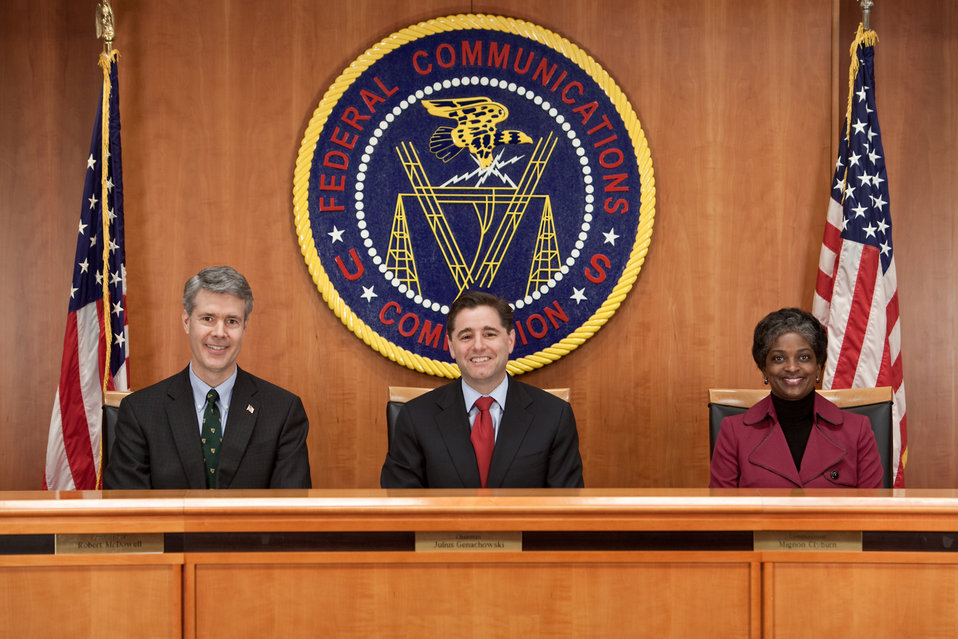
FCC Chairman and Commissioners - March 2012

L to R: Commissioner Robert M. McDowell, Chairman Julius Genachowski and Commissioner Mignon Clyburn

March 21, 2012.